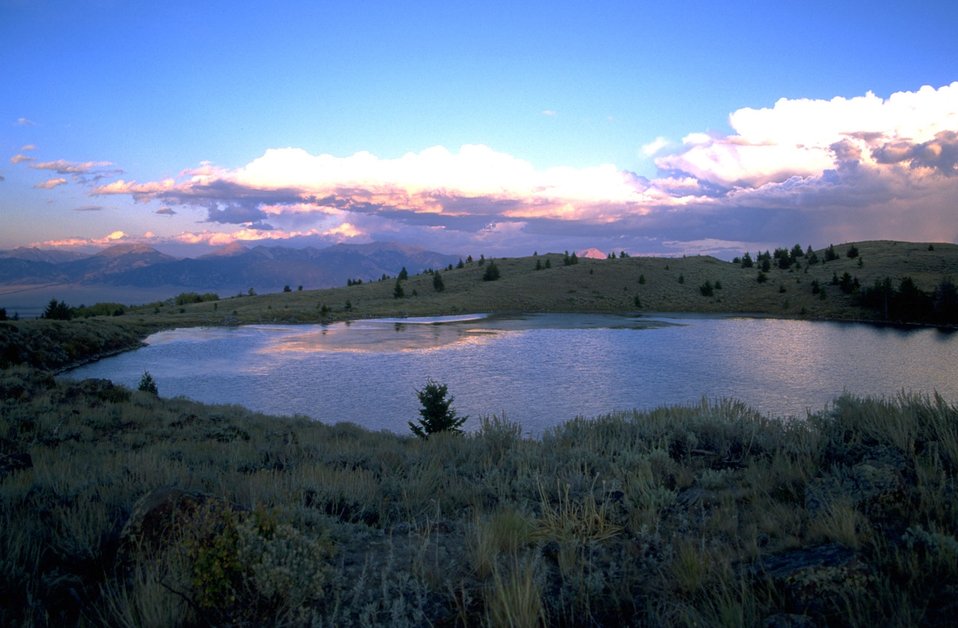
Scenic view of a sunset and a lake